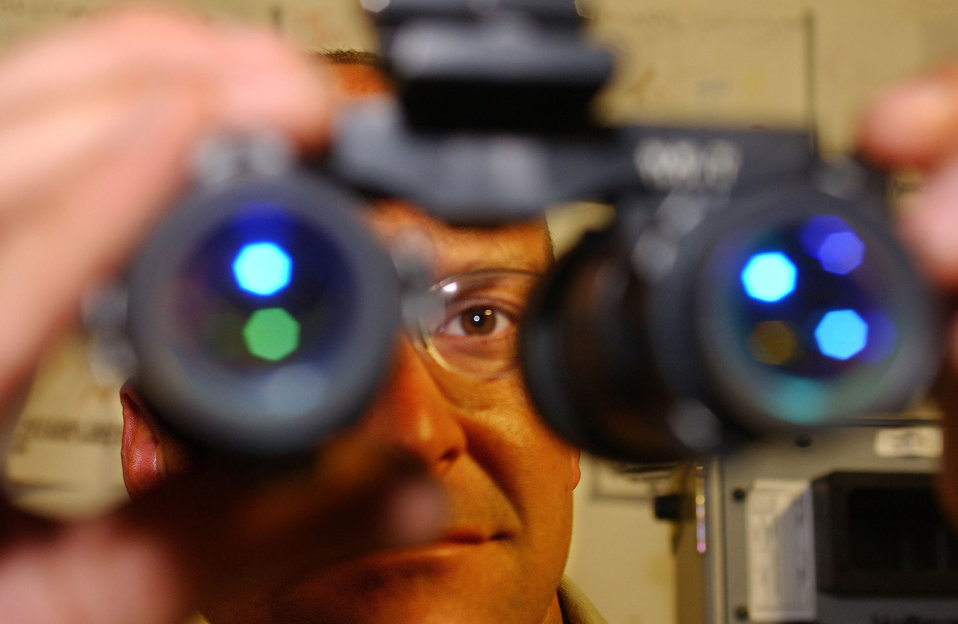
Visual inspection

OPERATION IRAQI FREEDOM -- Staff Sgt. Joel Hady inspects night-vision goggles for defects. He is deployed from the 327th Airlift Squadron from Willow Grove Air Reserve Station, Pa., to a forward-deployed location supporting Operation Iraqi Freedom.